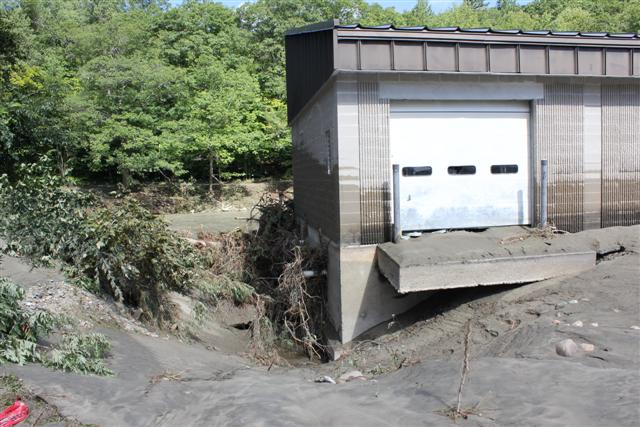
Damage after Irene

Post Hurricane Irene damage at White River National Fish Hatchery in Bethel, VT. Sunday, August 28, 2011.